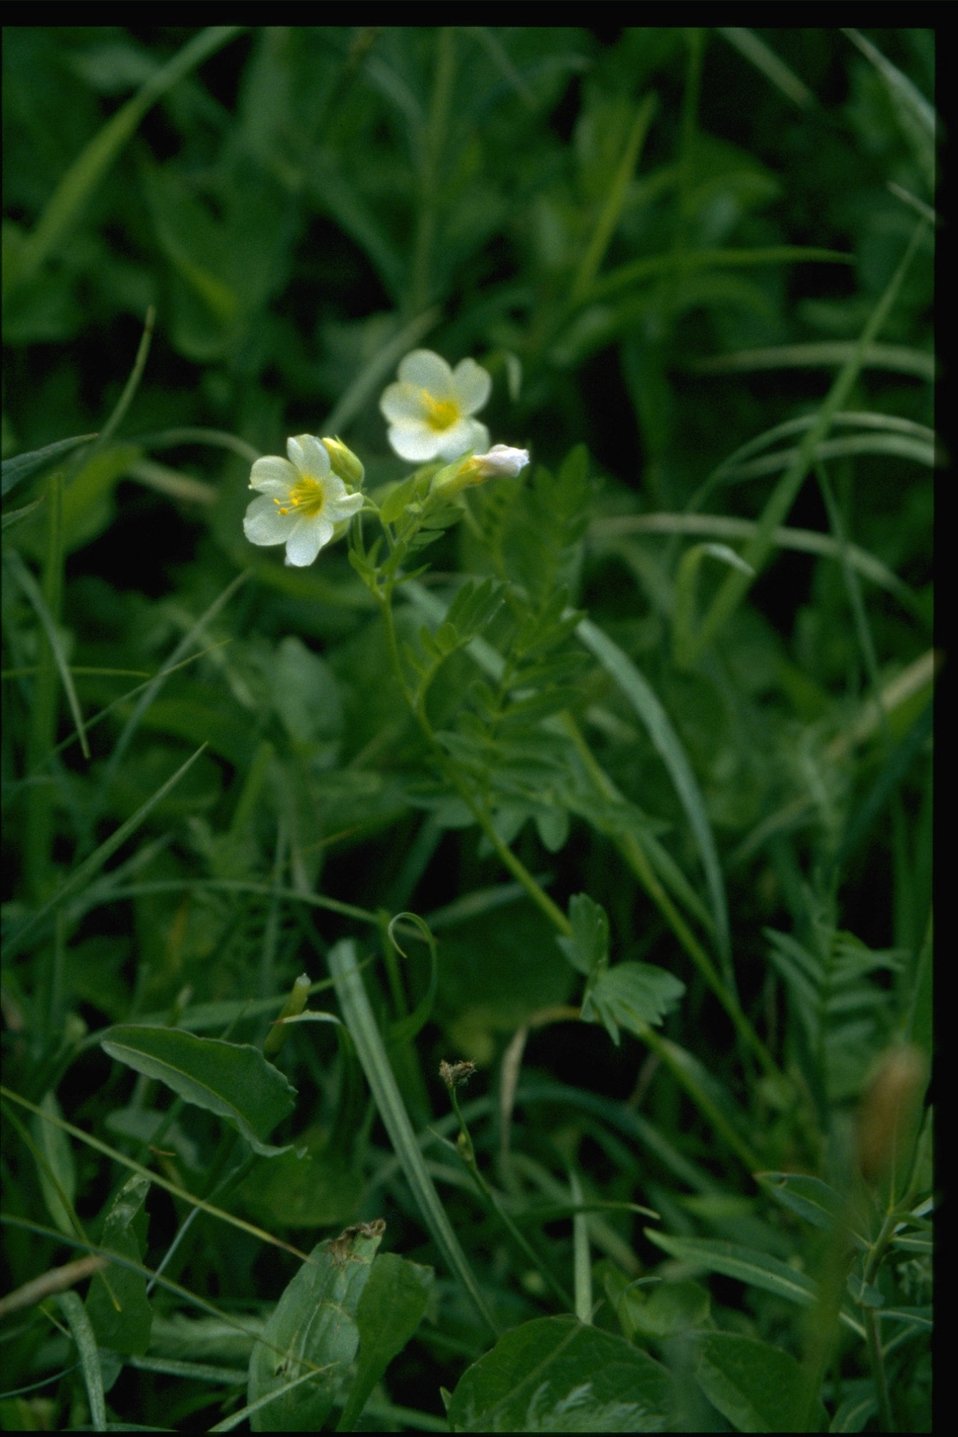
Farshot of Polimonium pulcherrimum.